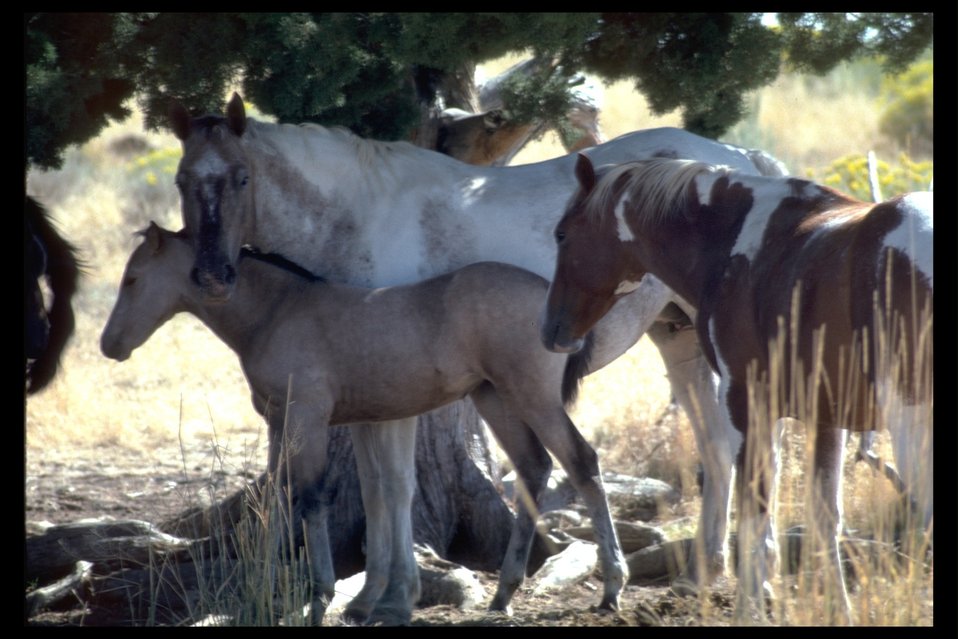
Wild horses standing in the shade in South Steens HMA.